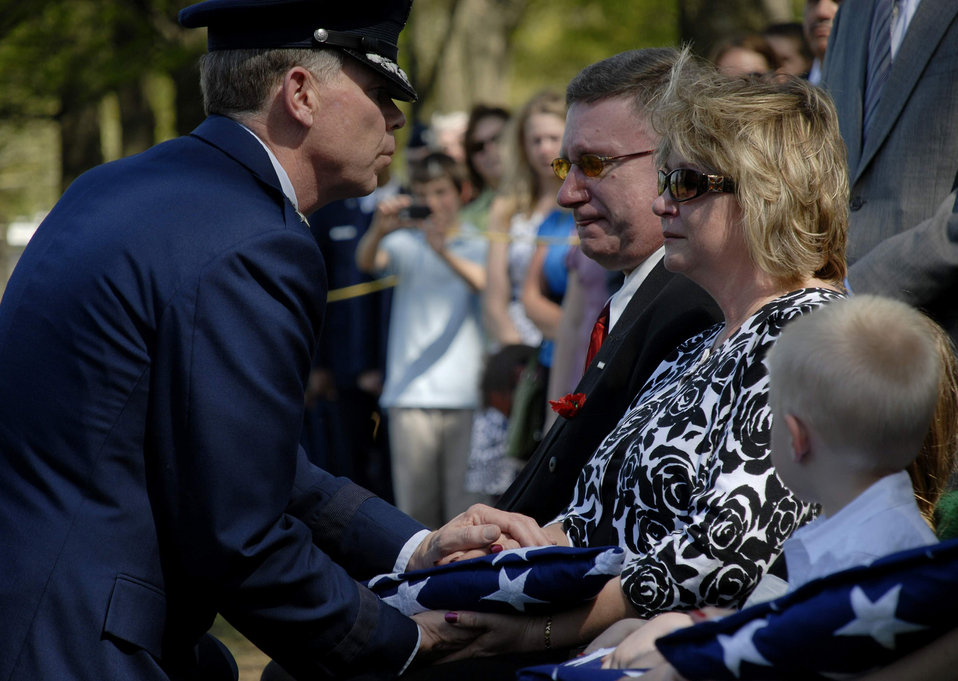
A fallen hero is laid to rest

Maj. Gen. Del Eulberg presents the U.S. flag to Treasa Hamilton during the funeral for her son Tech. Sgt. Phillip A. Myers April 27 at Arlington National Cemetery. Sergeant Myers, from Hopewell, Va., was killed April 4 in Afghanistan by an improvised explosive device. His family was the first to allow media coverage of the dignified transfer of remains at Dover Air Force Base, Del., since Defense Secretary Robert Gates lifted the 1991 ban April 6. General Eulberg is the Air Force civil engineer.